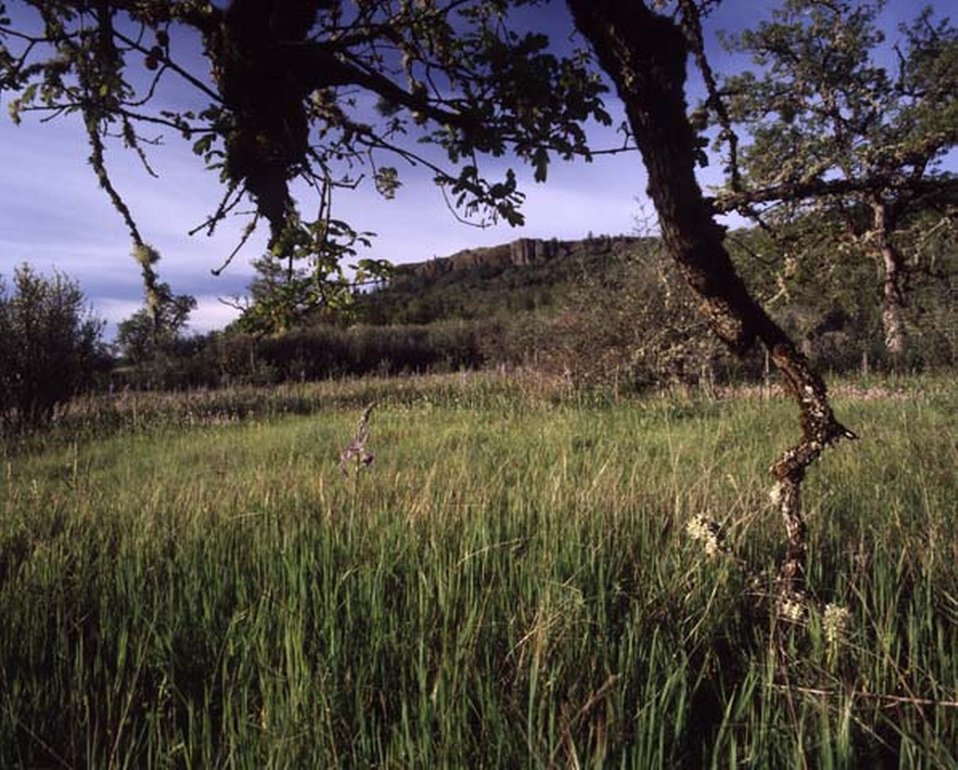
Far shot of Lower Table Rock.